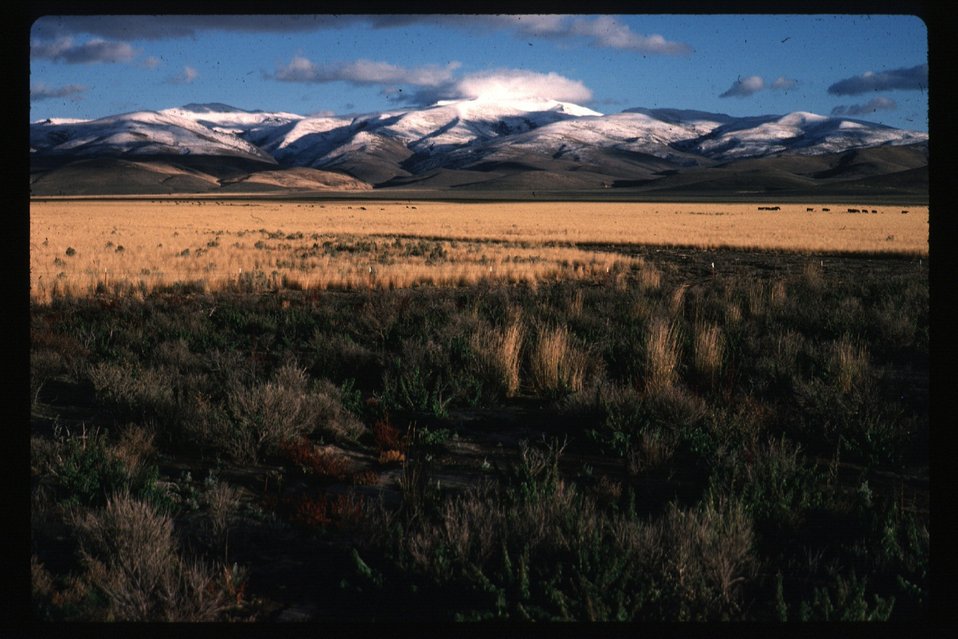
Crested Wheat Grass Brush, grasses Wildflowers